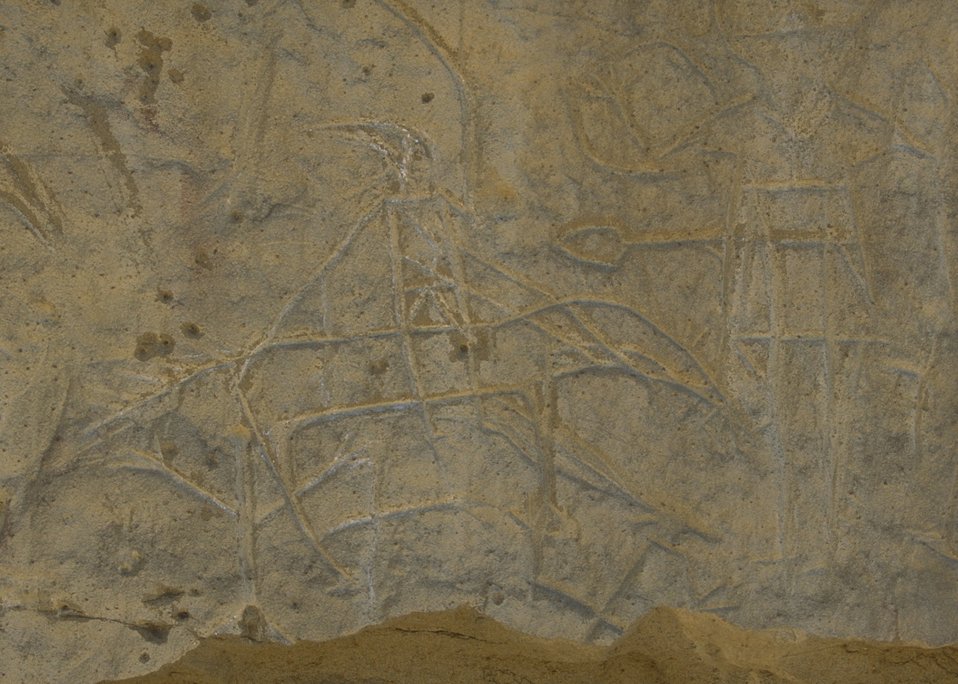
White Mountain Petroglyphs, Rock Springs Field Office.